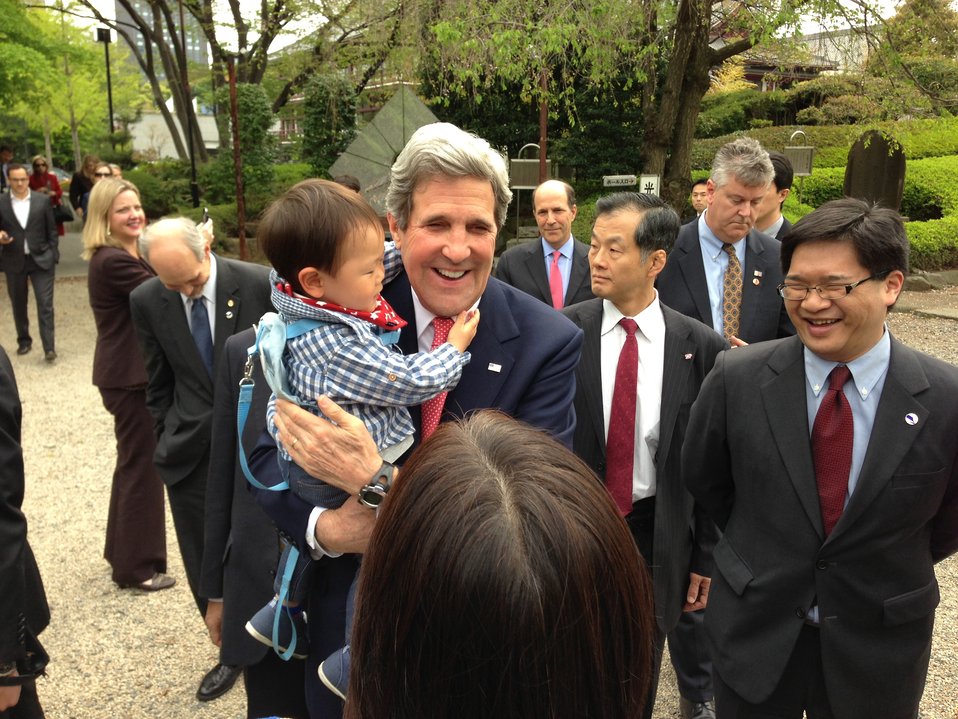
Secretary Kerry Laughs After Getting a Hug from a Japanese Child at Zojoji Shrine

U.S. Secretary of State John Kerry laughs after getting a hug from Ryousei, an 18-month-old he met while touring the Zojoji Shrine, in Tokyo, Japan, on April 14, 2013.